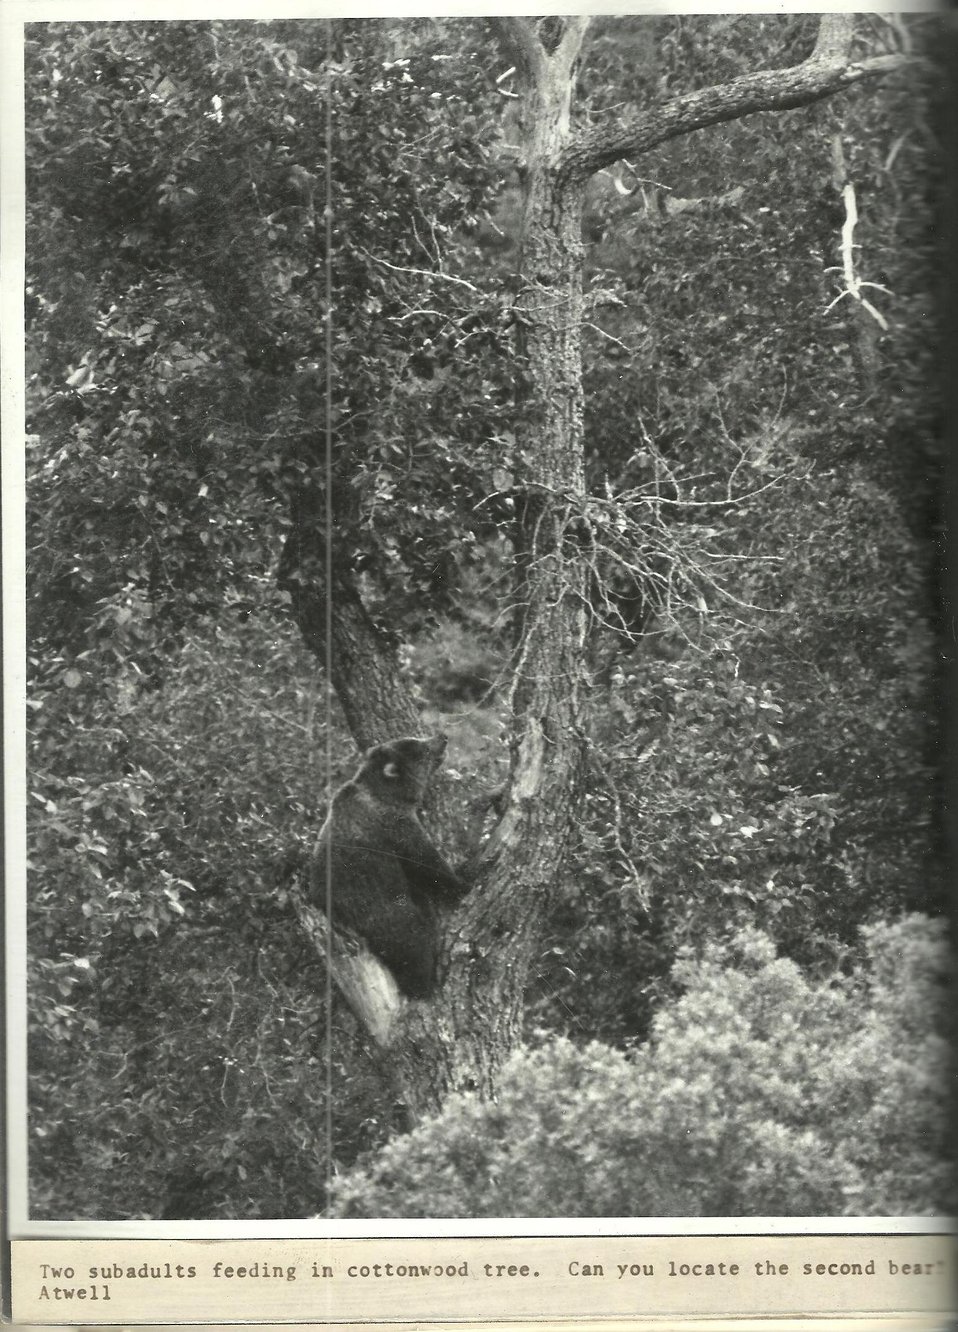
(1971) Can You Find the Second Bear

Credit: USFWS

Source and Contact: Kodiak National Wildlife Refuge